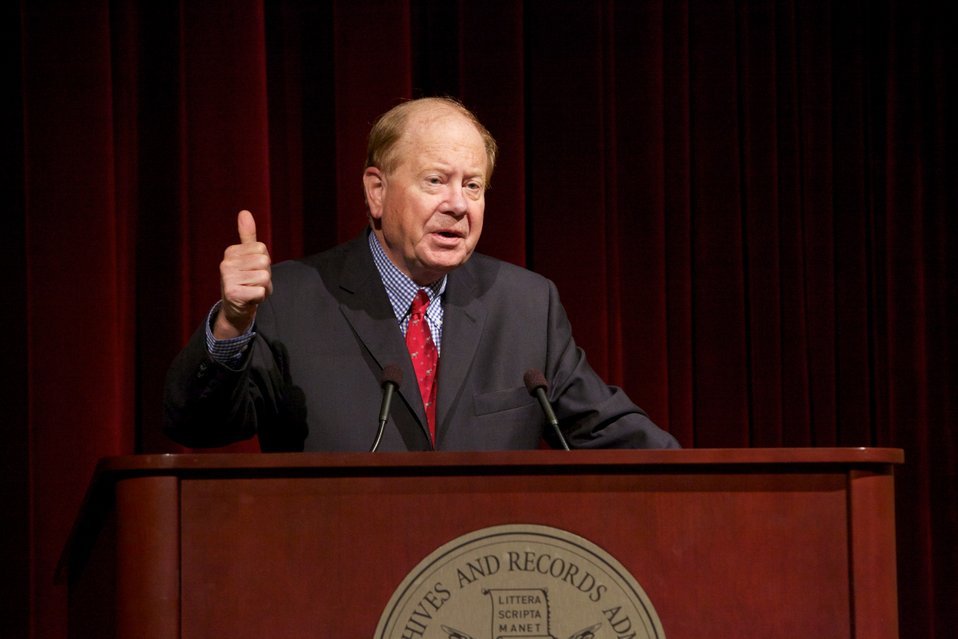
Revolutionary Summer; Joseph Ellis, author, discusses his book Revolutionary Summer: The Birth of American Independence